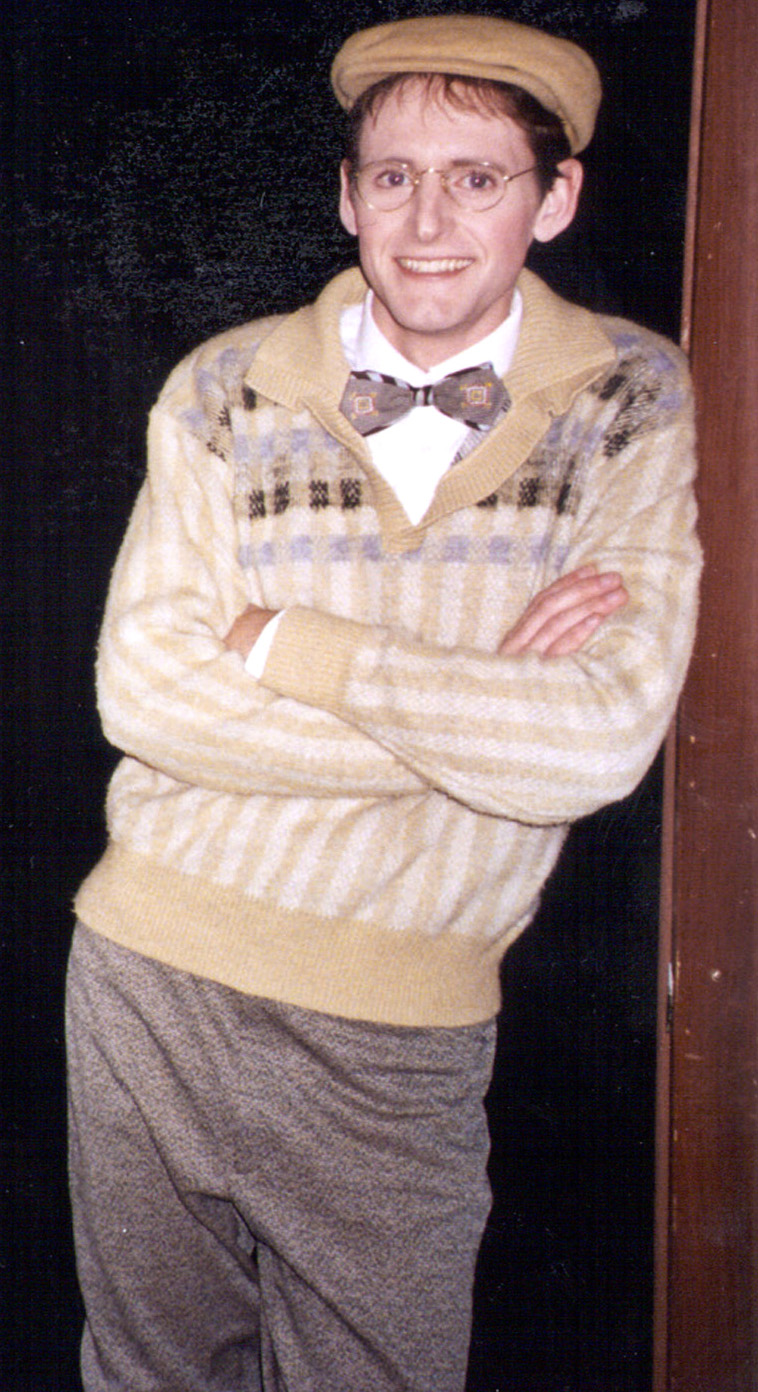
An acting boom operator

CEDAR FALLS, Iowa -- Senior Airman Eric Ryan was in a 2001 production of